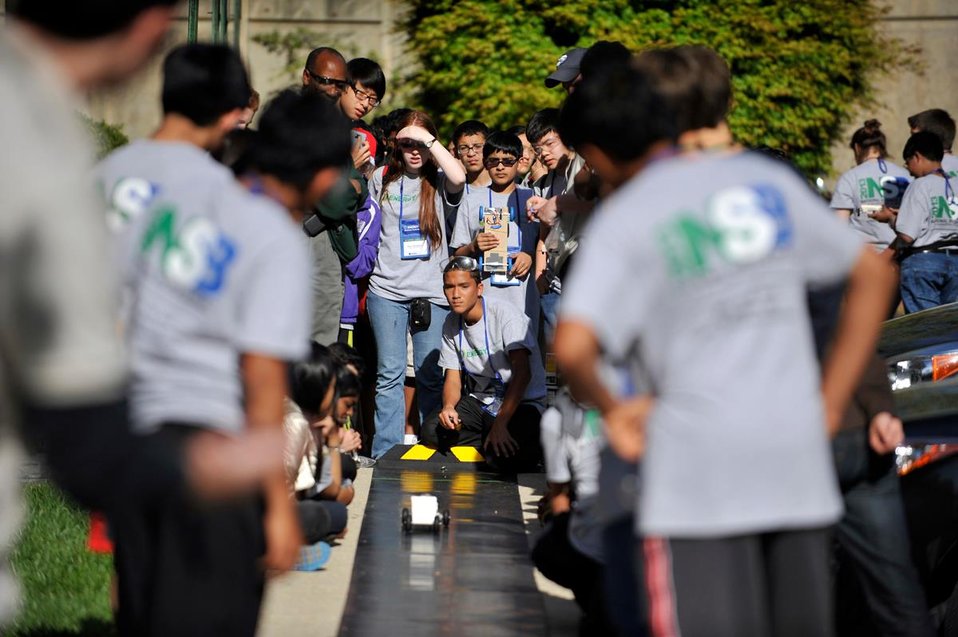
Photo of the Week: National Science Bowl Participants on the Fast Track to a Future in STEM

After months of training and preparation, regional Science Bowl champions gathered in Washington, D.C. to compete for the national title at the 2013 National Science Bowl. Some of the nation's best and brightest high school and middle school students spent the past few days showing off their science, technology and engineering skills by completing a series of tasks, including the construction of a miniature electric car, using only household items and a lithium-ion battery. In this photo, Yaniel Ramirez from Colegio Catolico Notre Dame in Caguas, Puerto Rico launches his team's electric car down the test track.